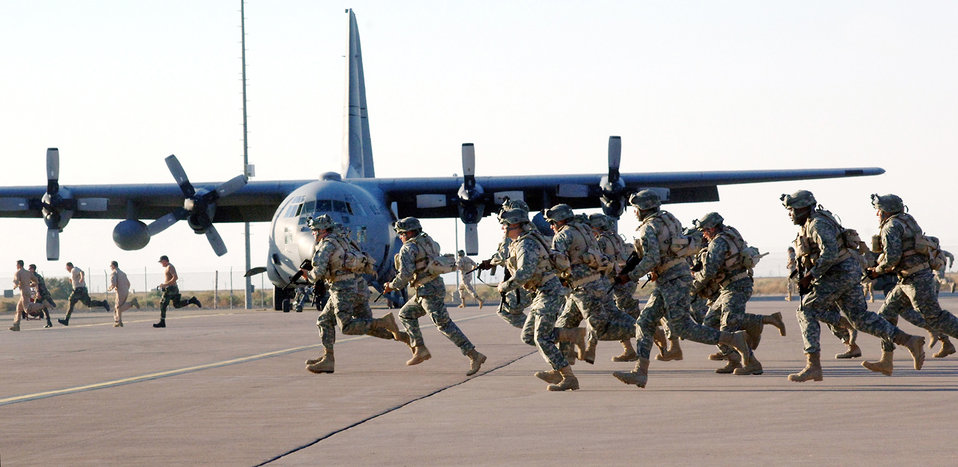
From Holloman to Hollywood, Transformers make movie magic

Airmen filling the roles of movie extras run on the set of the movie